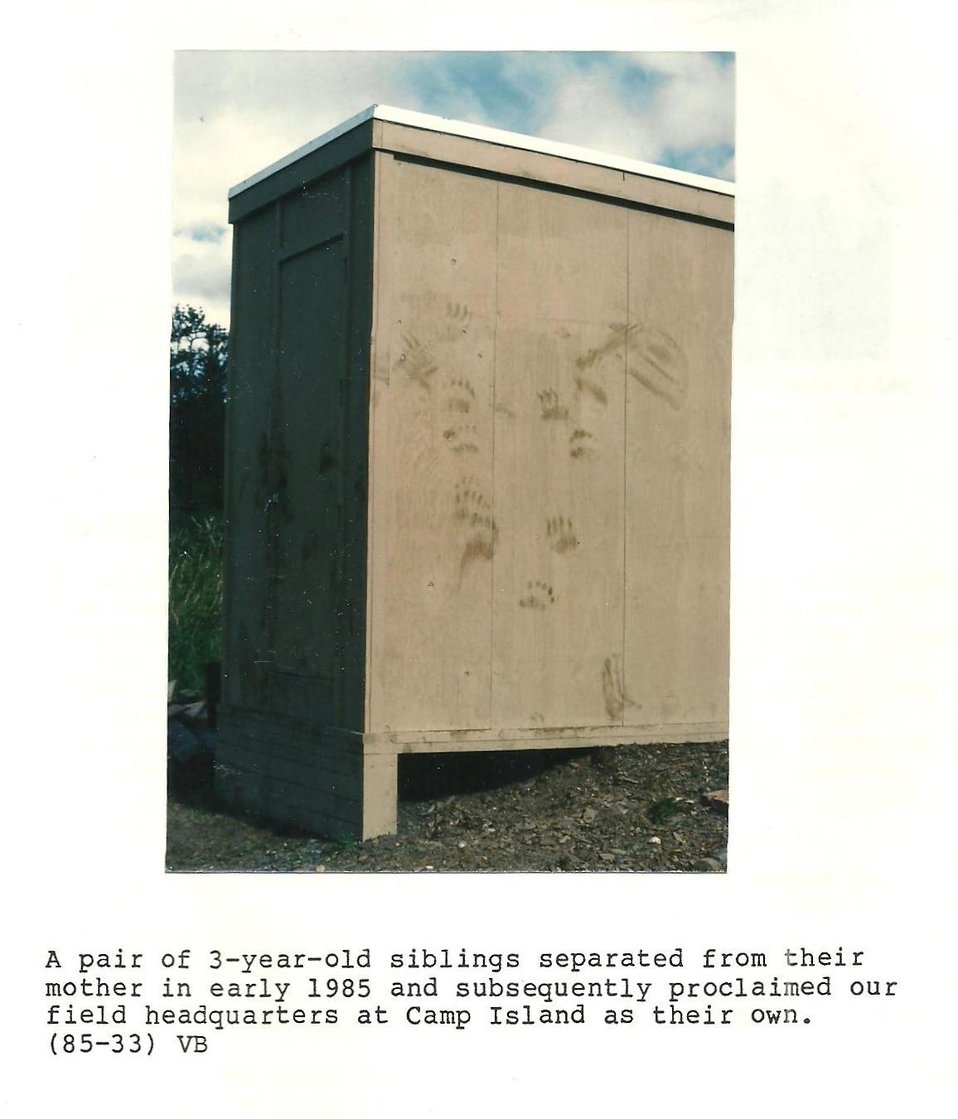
(1985) Bear Cub Prints

Credit: USFWS

Source and Contact: Kodiak National Wildlife Refuge